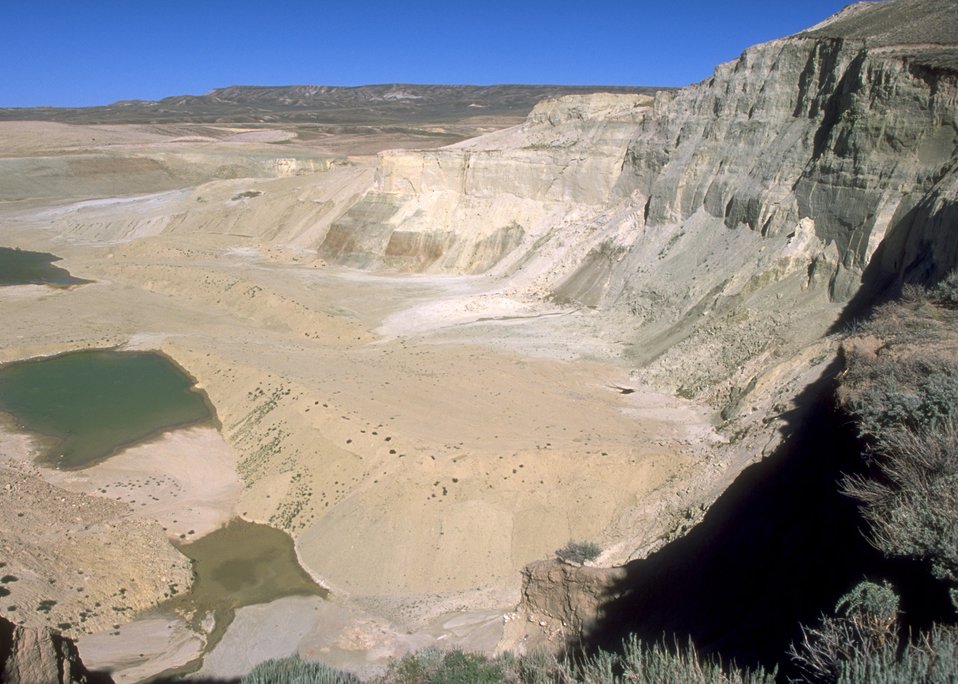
Gas Hill Abandoned Mine Lands in various stages of rehabilitation, Lander Field Office.